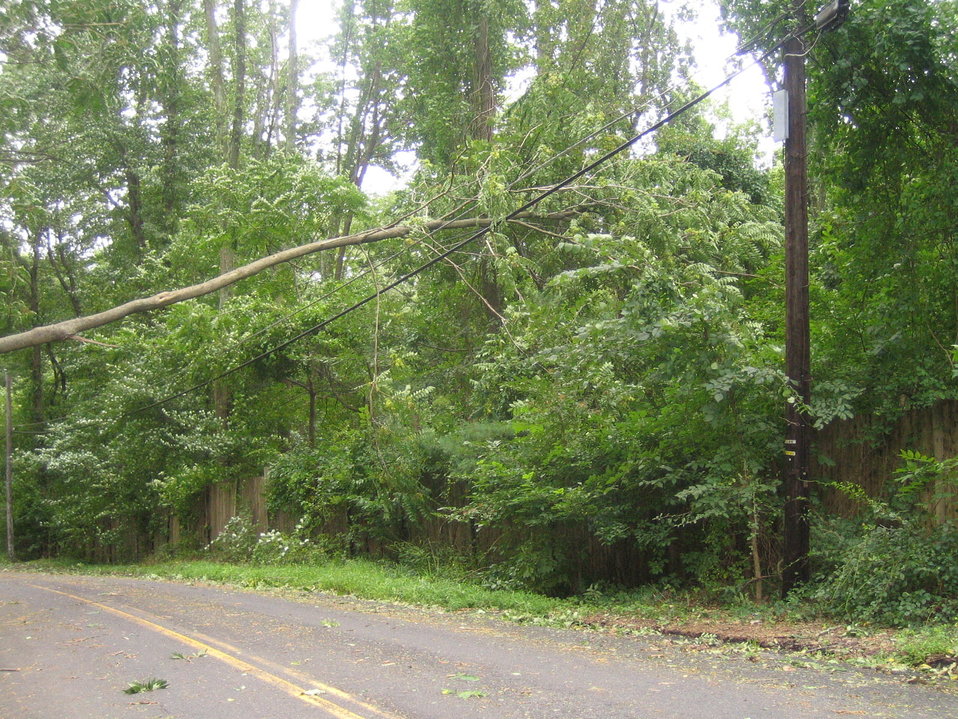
Downed tree at Great Swamp

Downed tree from Hurricane Irene at Great Swamp National Wildlife Refuge in New Jersey.